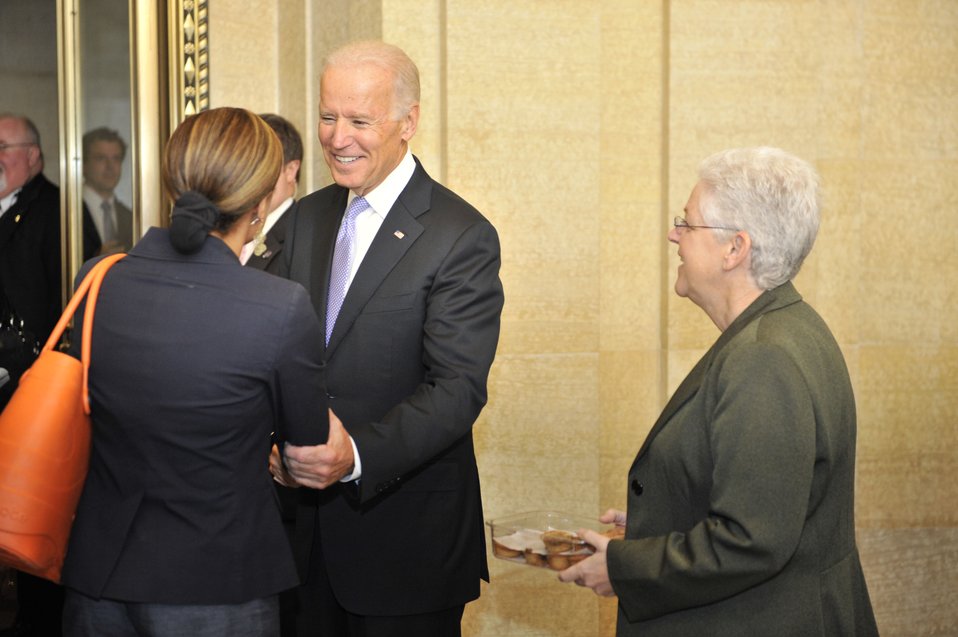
Vice President Biden and Administrator McCarthy at EPA HQ

Vice President Joe Biden and Administrator Gina McCarthy welcome EPA employees back to work.